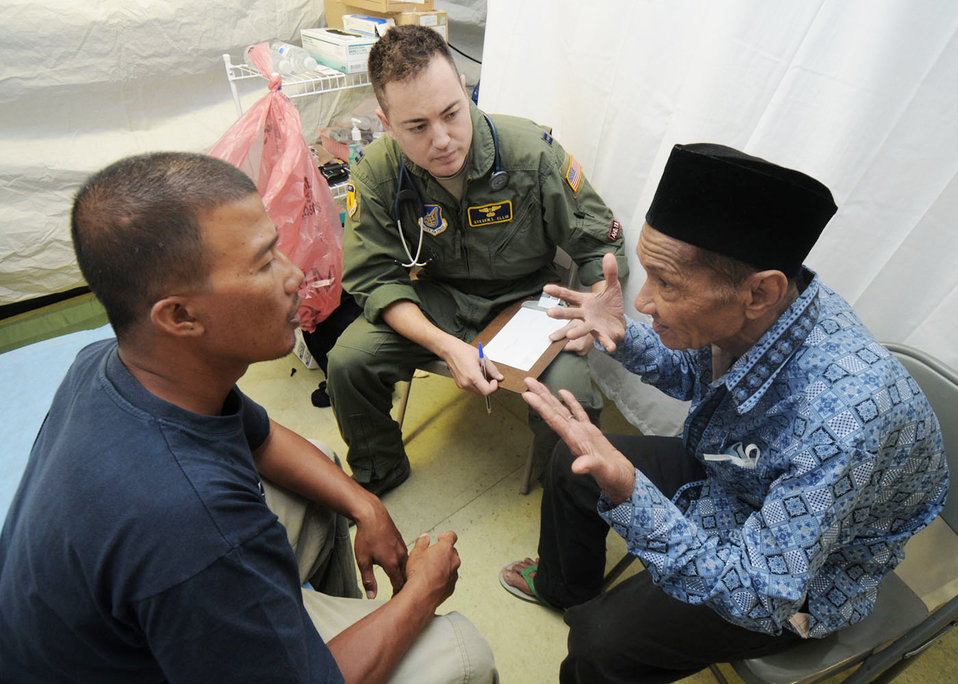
Interpreters key to Air Force efforts in Indonesia

Capt. Steven Ellis collects medical history information from a patient with the help of Khairul, a local interpreter, Oct. 10, 2009, in Padang, Indonesia. Captain Ellis is a flight surgeon from the 36th Medical Group at Andersen Air Force Base, Guam, and is deployed here with an Air Force humanitarian assistance rapid response team to provide medical assistance to those affected by the recent earthquakes.